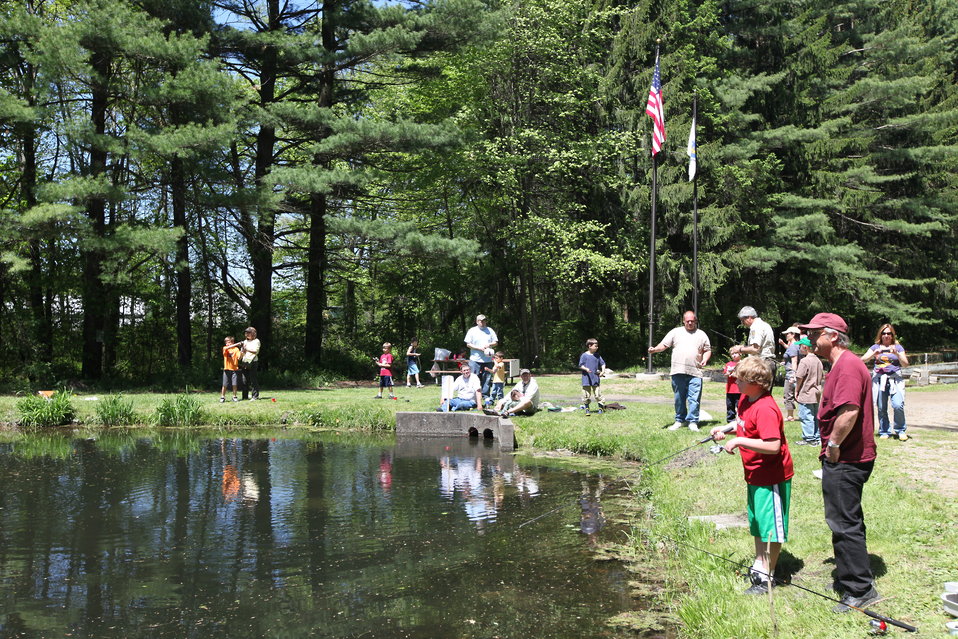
Youth Fishing Derby 2012

Megan Nagel/USFWS